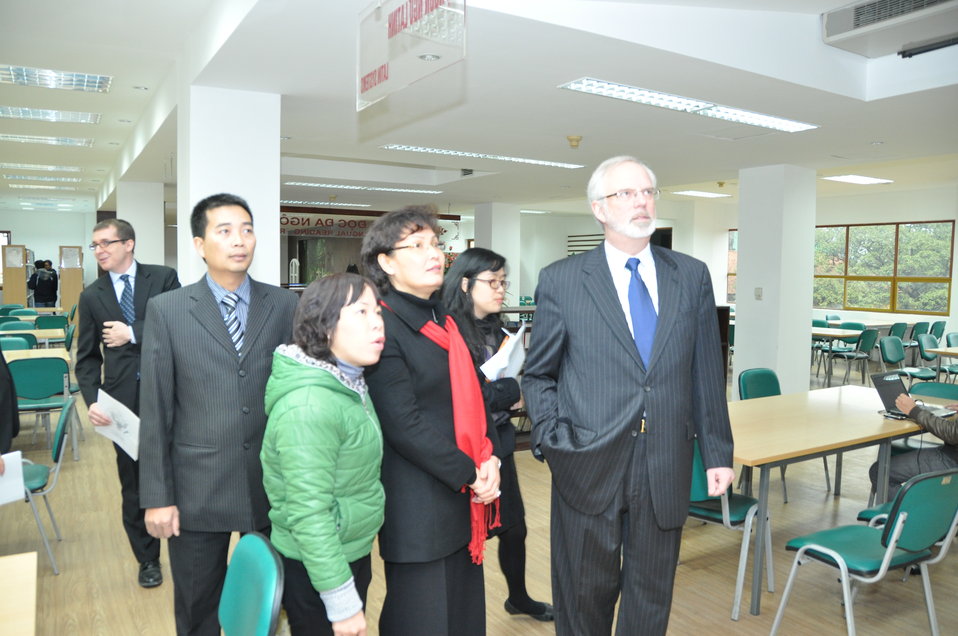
U.S. Ambassador David Shear opens safe medicine exhibition in Hanoi

Safe Medicine Exhibition